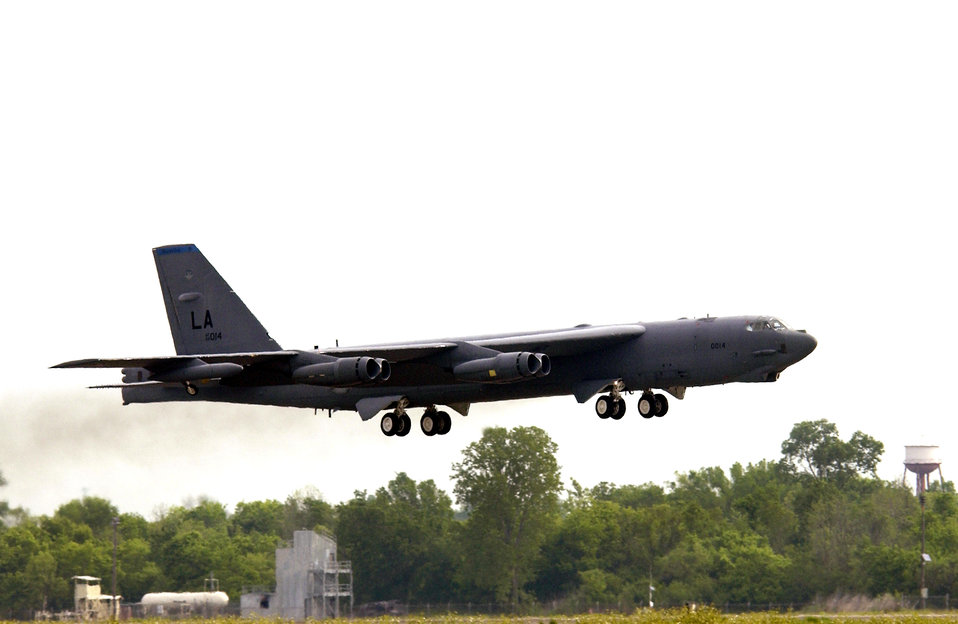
50th anniversary of B-52 delivery

BARKSDALE AIR FORCE BASE, La. -- A B-52 Stratofortress takes off from here. June 29 marked the bomber's 50th anniversary.